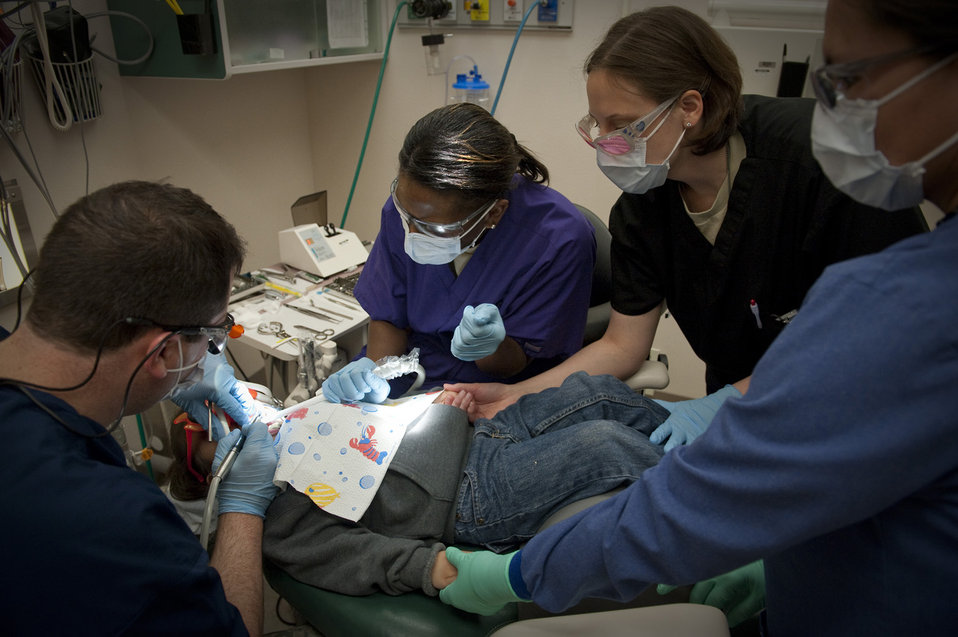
Guard, active-duty Airmen provide dental care to remote Alaskan village

A dental technician comforts a child undergoing a dental procedure April 15, 2010, in Kotzebue, Alaska. An Air Force dental team composed of active duty, Guard and Reserve Airmen deployed to Kotzebue as part of Operation Arctic Care, a joint innovative readiness training exercise.